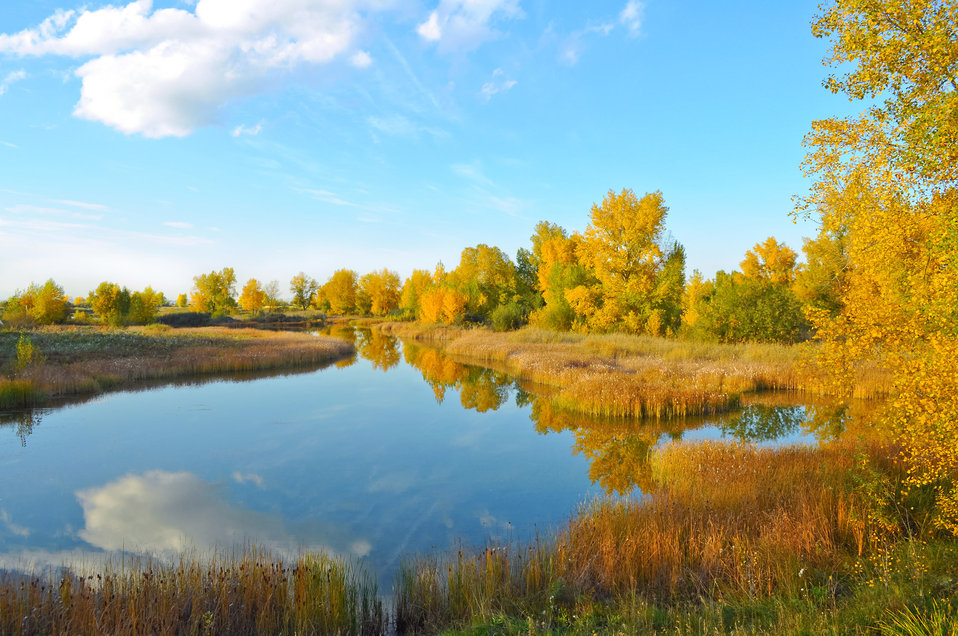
Sunny day

Indian summer on the lake.